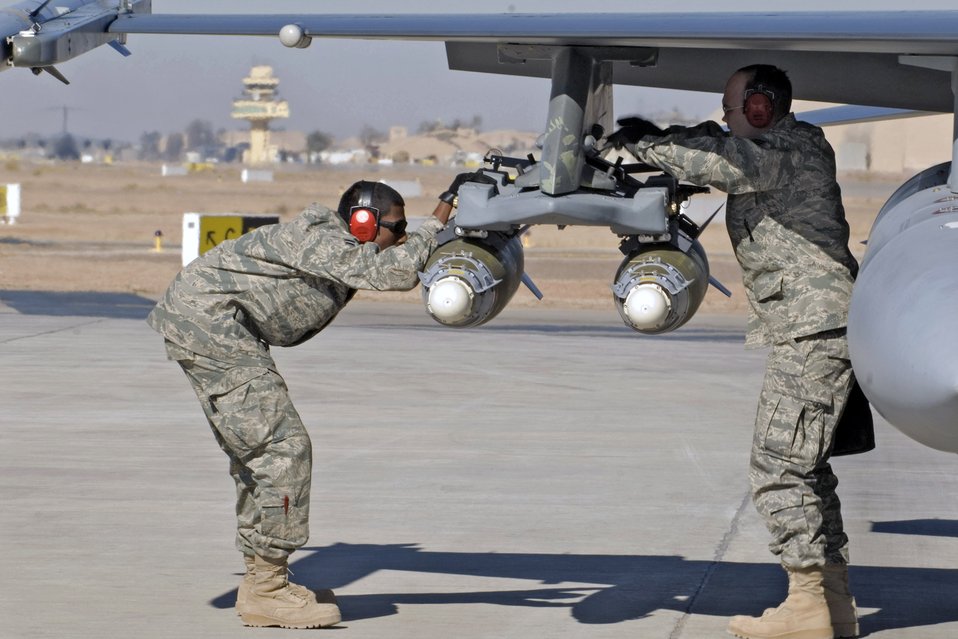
Everything checks...

Airman 1st Class Mayuran Arunachalam (left) and Staff Sgt. Michael Norton inspect the munitions on an F-16 Fighting Falcon Jan. 16 prior to takeoff. The two Airmen are armament specialists with the 332nd Expeditionary Maintenance Squadron at Balad Air Base, Iraq.